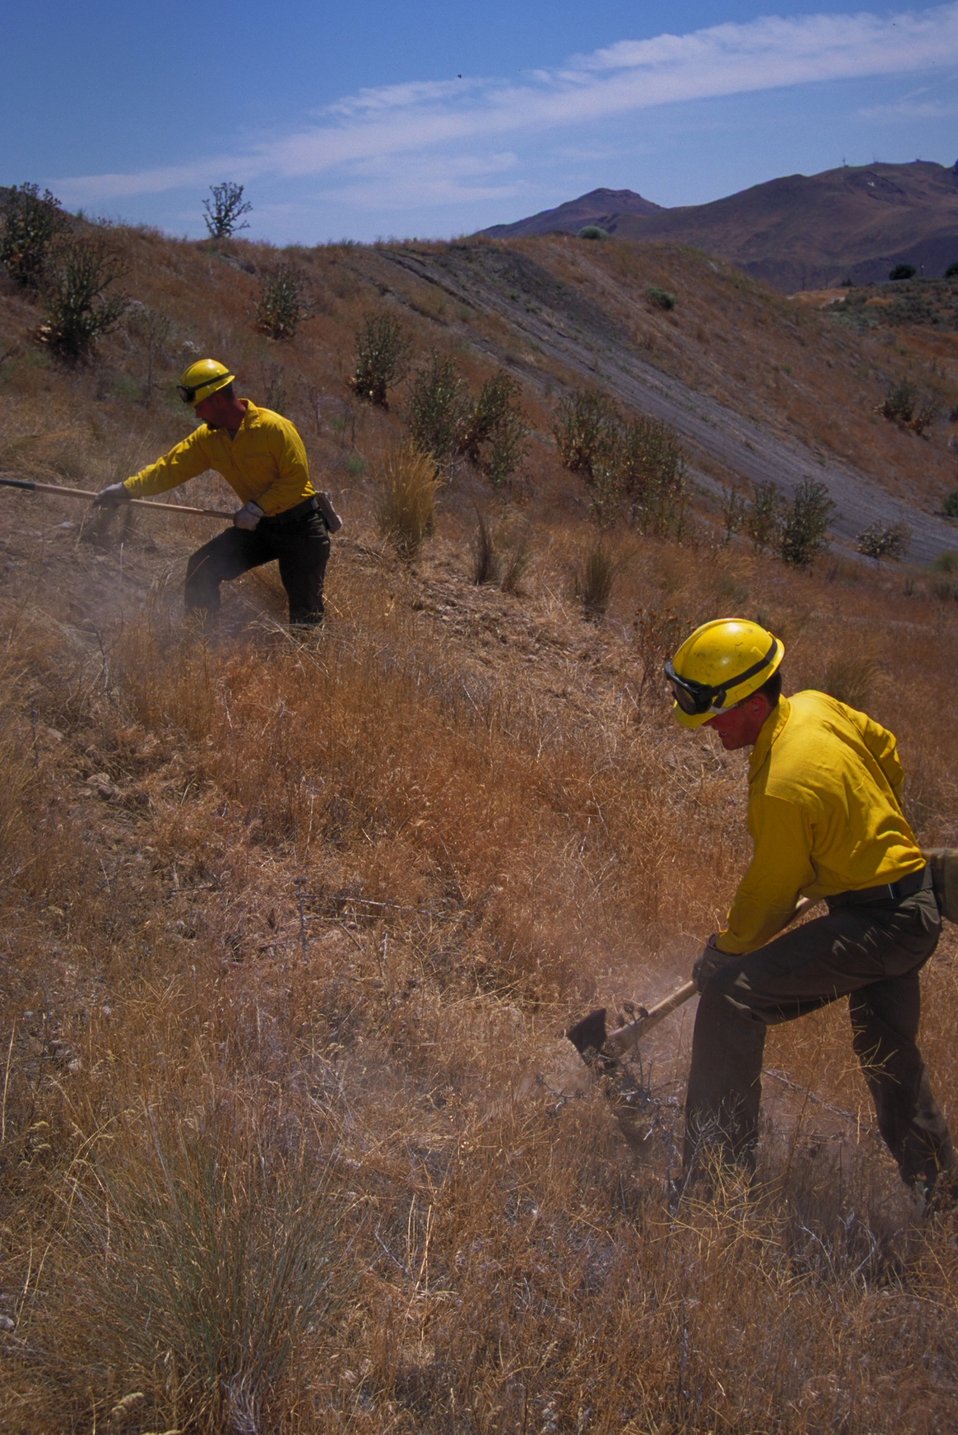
Fire fighter line crew Fire Season 2000 Lower Snake River District LSRD